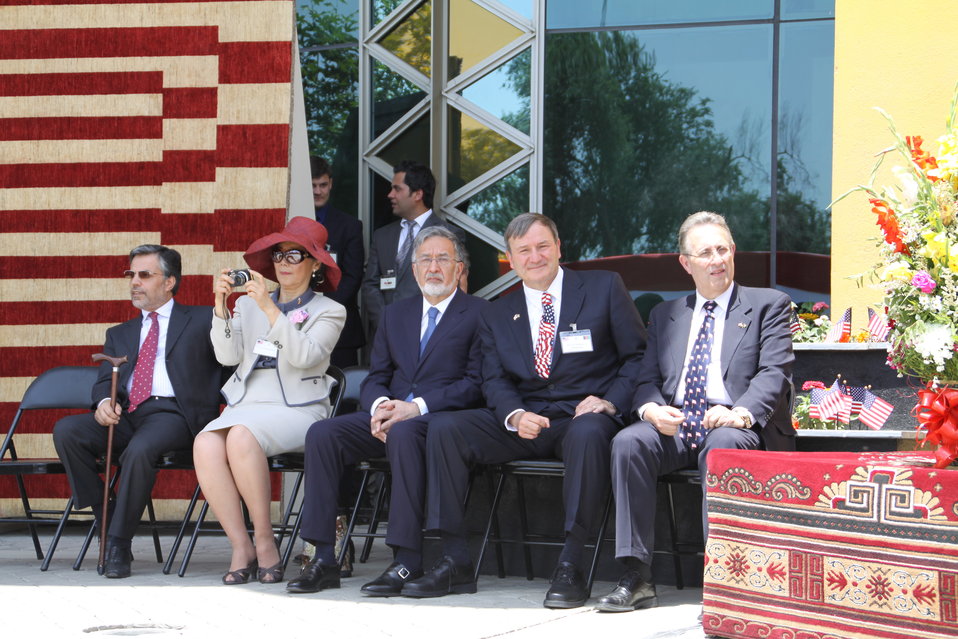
Kabul Official July 4th Celebration